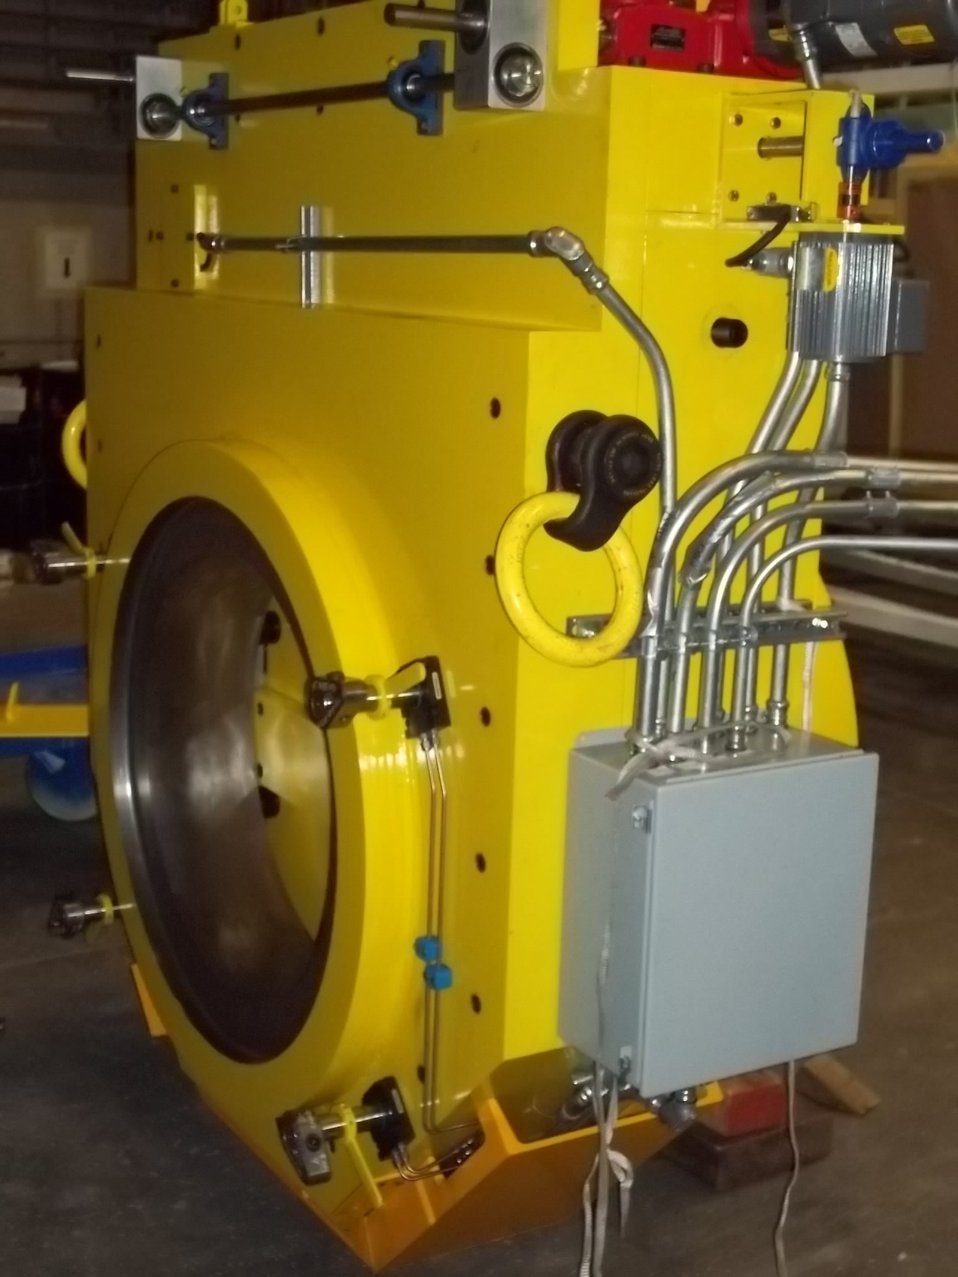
WIPP - Recovery Act Investment Increases Efficiency of Transuranic Waste Disposal

The alignment fixture assembly shield valve was designed to give workers at the Waste Isolation Pilot Plant more flexibility during remote-handled transuranic waste emplacement activities, allowing them to accommodate unexpected maintenance.